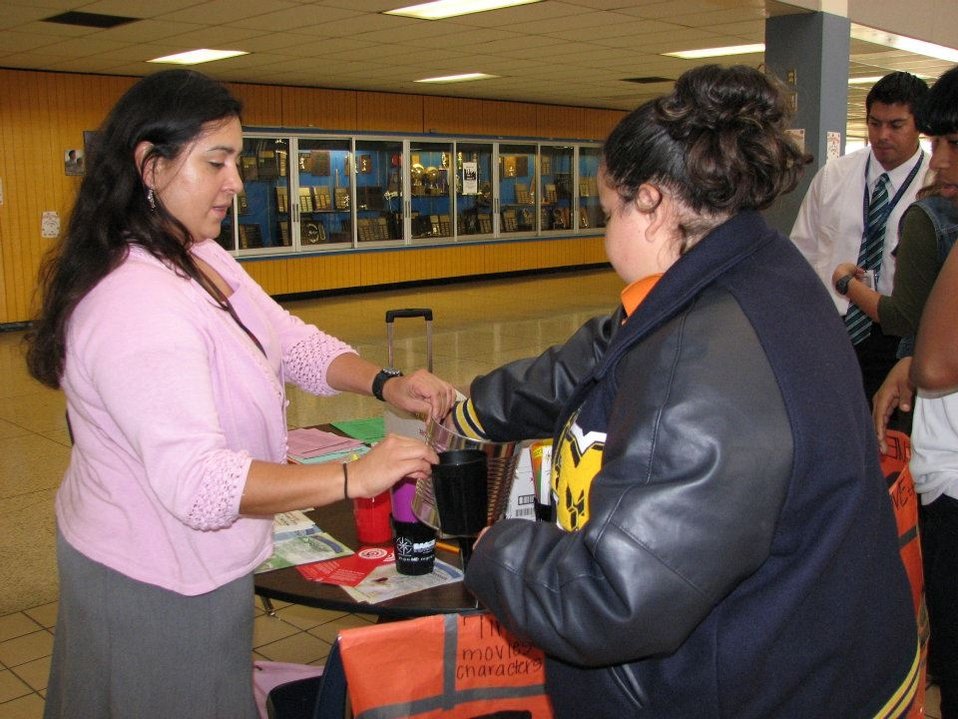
La Marque High School's NDFW event

Drawing raffle winners at La Marque High School.